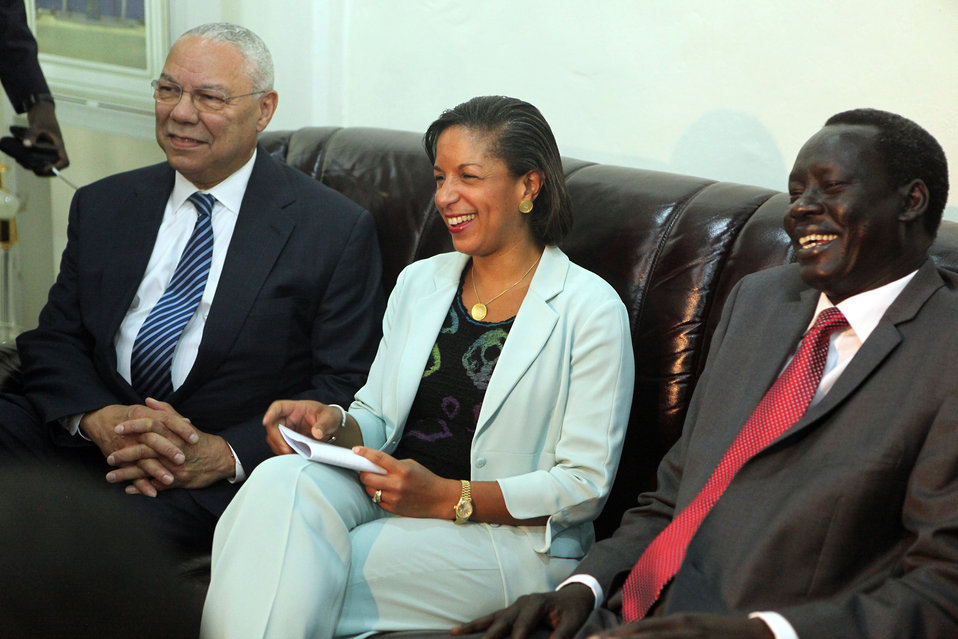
South Sudan Independence Day

Ret. General Colin Powell, former Secretary of State for the United States, and Ambassador Susan E. Rice, U.S. Permanent Representative to the United Nations, speak with press at the Juba International Airport in Juba, South Sudan on July 9 2011.